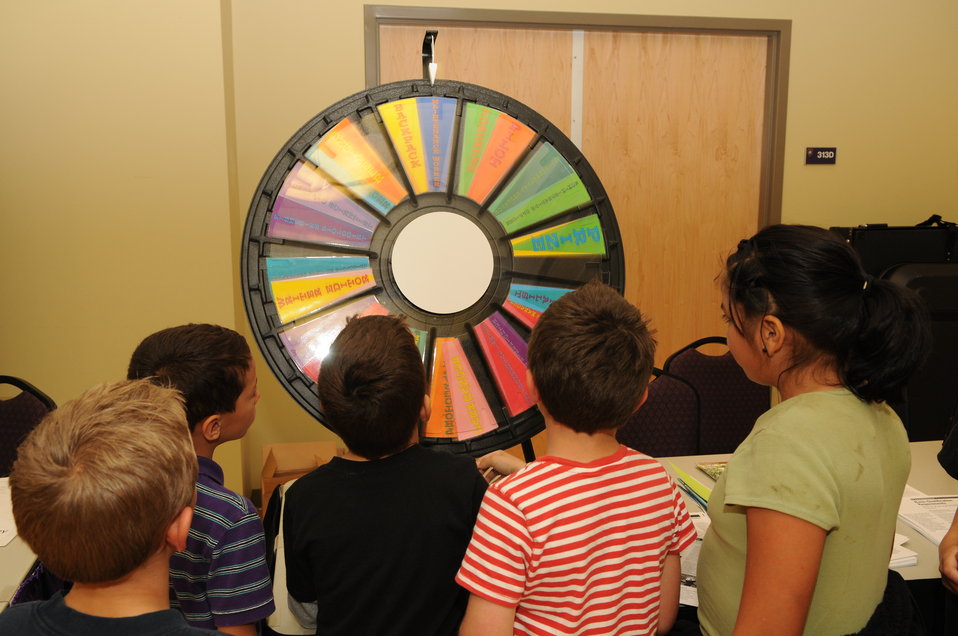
Youth Outreach

The U.S. Fish & Wildlife Service sponsored the 2012 Federal Duck Stamp Art Contest September 28 and 29 in Ogden, Utah, at Weber State University. A panel of five judges was responsible for choosing the art work used to design the 2013-2014 Migratory Bird Hunting and Conservation Stamp.